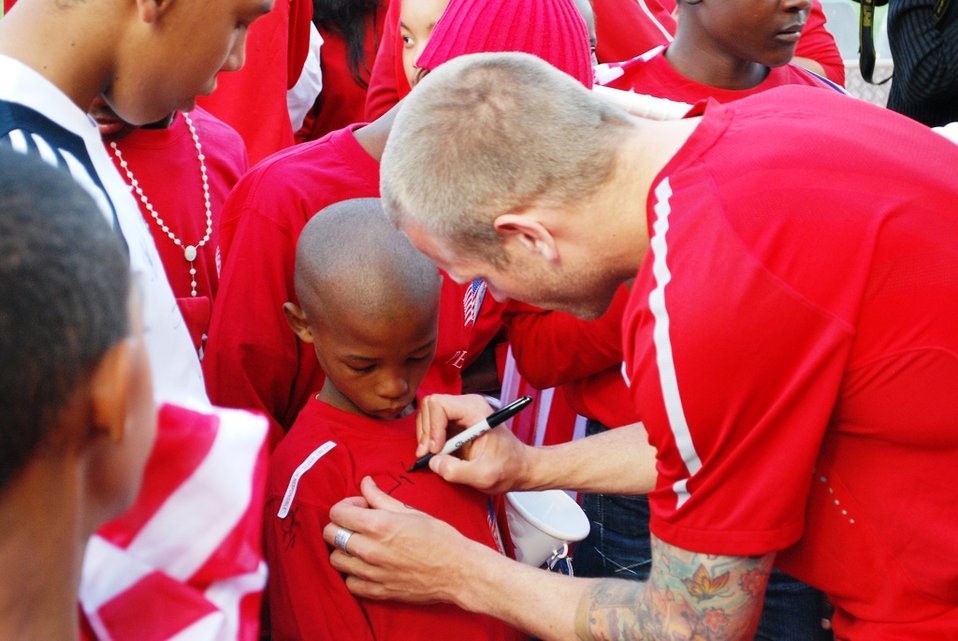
U.S. National Soccer Team Members Signs His Autograph

A member of the U.S. National Soccer Team signs an autograph for a South African student at the U.S. National Soccer Team's open practice session at the Pliditch Stadium in Pretoria, South Africa, on June 6, 2010. The U.S. National Soccer Team is preparing for the 2010 World Cup in South Africa.